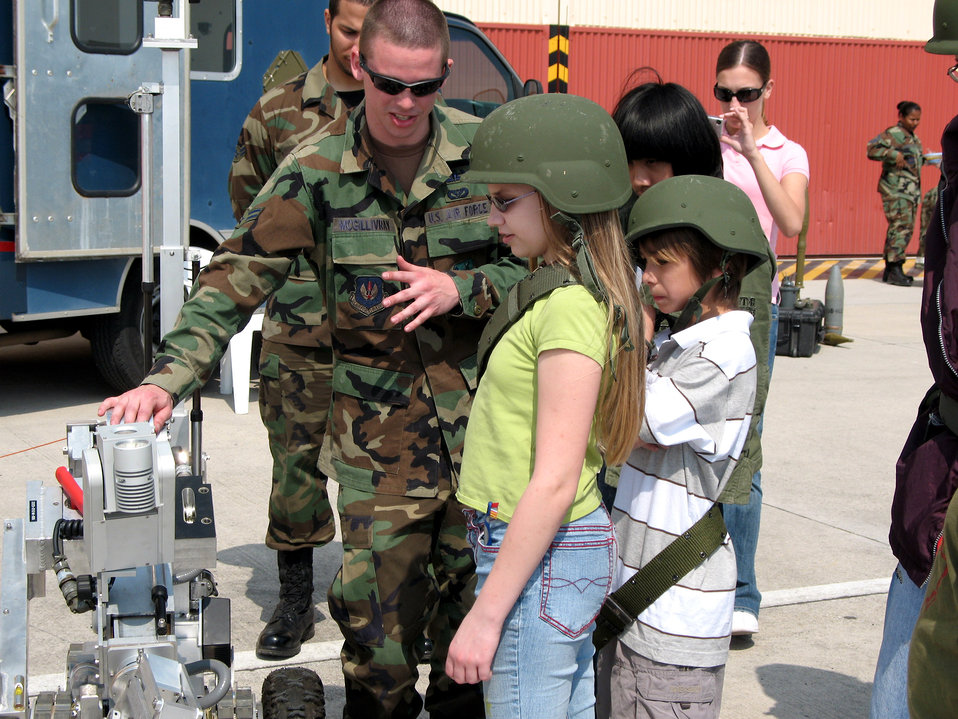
Aviano children go through mock deployment

Airman 1st Class Patrick McGillivray shows